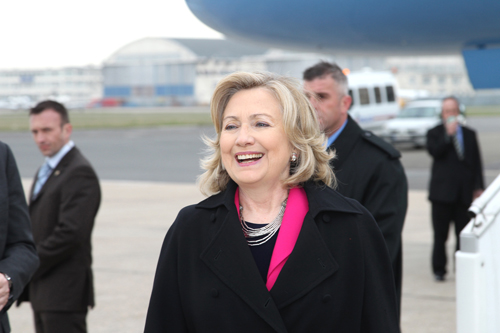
Secretary Clinton Prepares To Depart Paris

U.S. Secretary of State Hillary Rodham Clinton prepares to depart Paris at Le Bourget Airport in France on March 15, 2011.